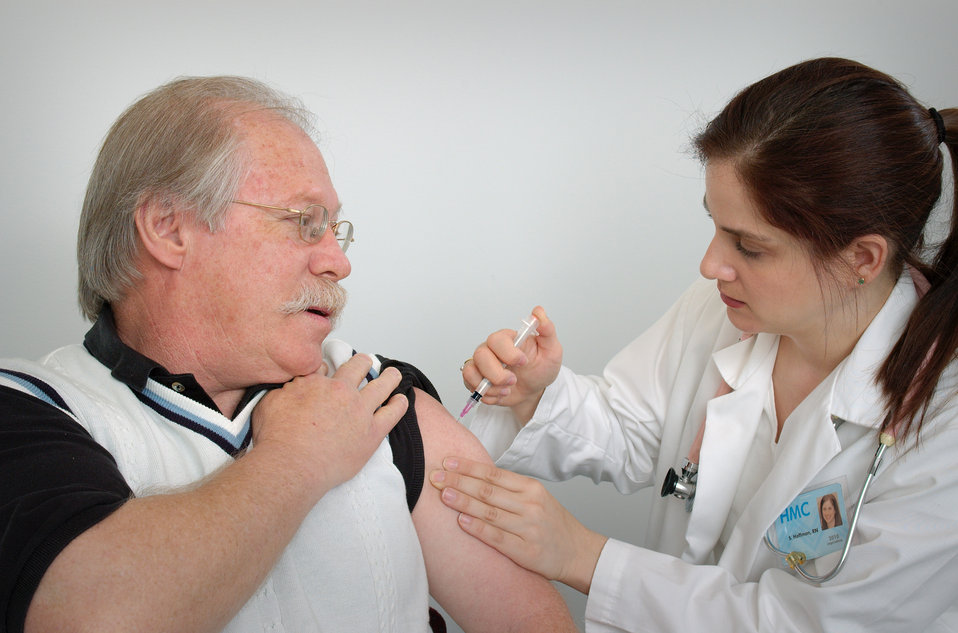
Photographed here in this 2006 image, was a middle-aged man receiving an intramuscular immunization into his left shoulder muscle from a female nurse.